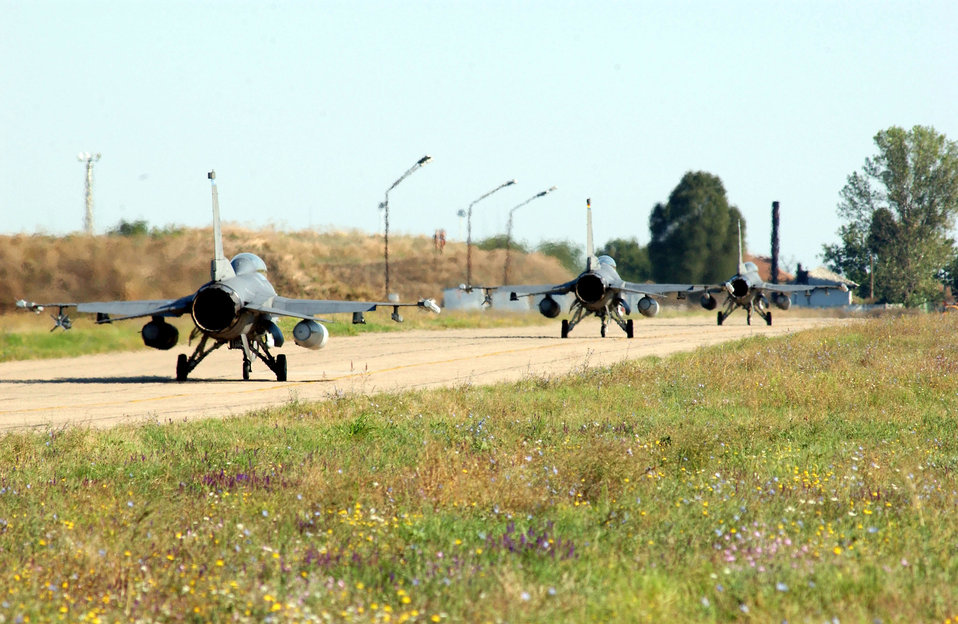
Viper Lance wraps up

Three F-16 Fighting Falcons taxi for takeoff before the last sortie flown at Mihail Kogalniceanu Air Base, Romania, during Exercise Viper Lance 2006. The exercise, which ran from Aug. 8 to 24, was the first time F-16 crews trained in Romania.